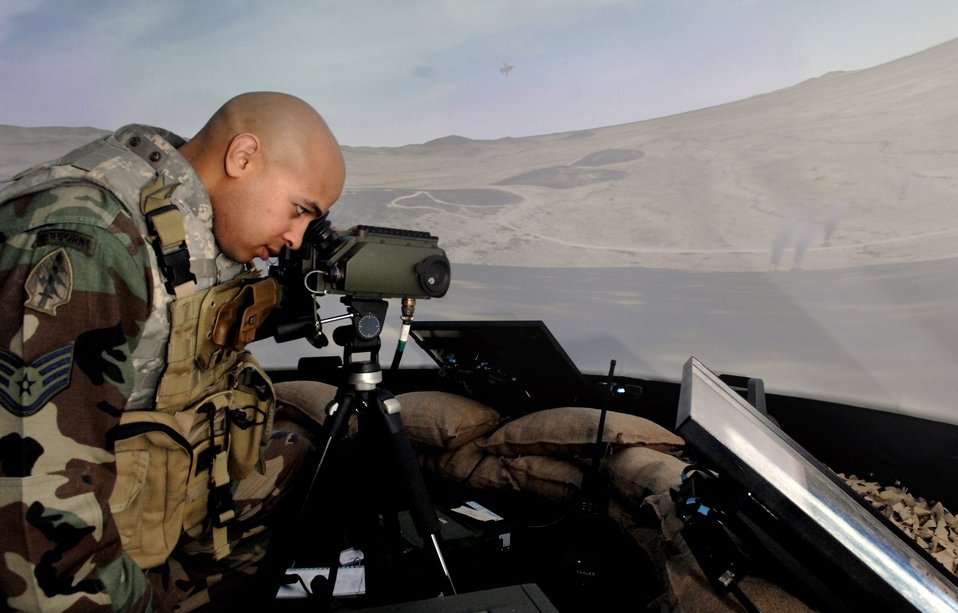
Conference makes virtual training a reality

Staff Sgt. Dennis Krouse surveys the are before he calls in close-air support Nov. 28 during a simulation at the Interservice/Industry Training, Simulation and Education Conference in Orlando, Fla. Sergeant Krouse is a joint terminal attack controller stationed at Fort Hood, Texas.